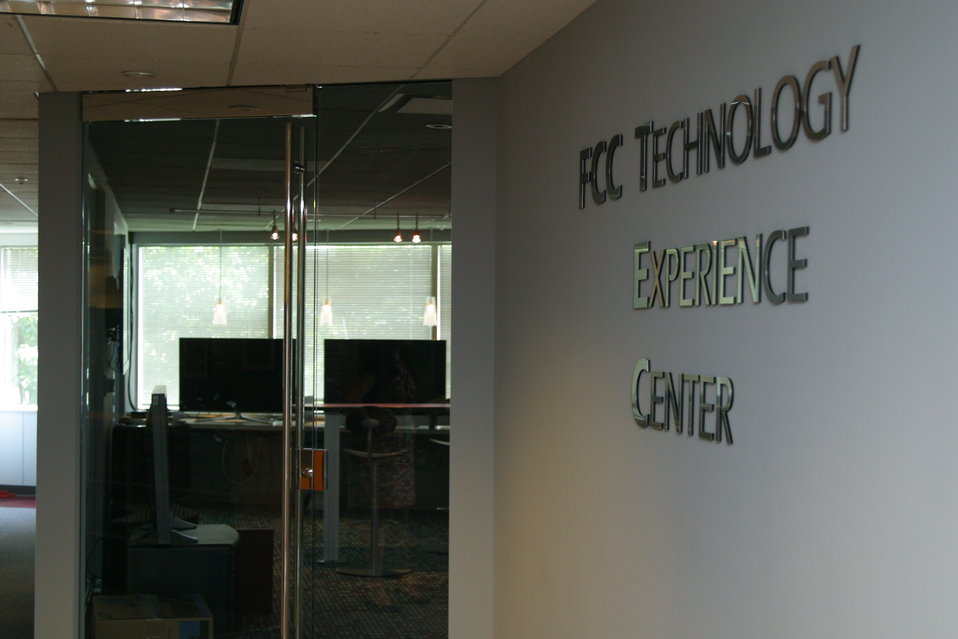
TEC Center

Debuting the FCC TEC Center on Wednesday July 13, 2011